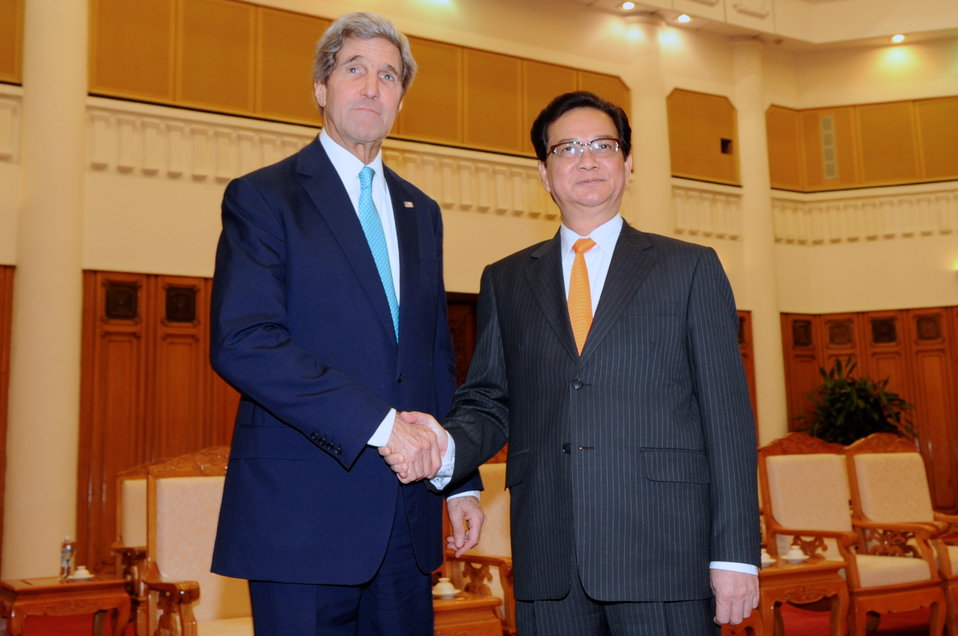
Secretary Kerry Meets With Vietnamese Prime Minister Dung

U.S. Secretary of State John Kerry shakes hands with Vietnamese Prime Minister Nguyen Tan Dung before a bilateral meeting in Hanoi, Vietnam, on December 16, 2013.